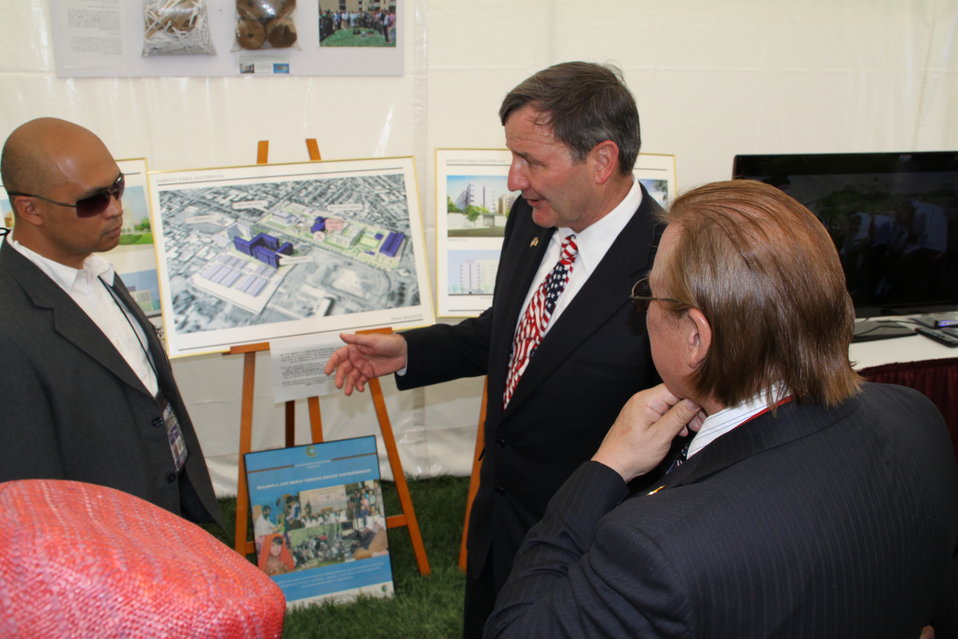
Kabul Official July 4th Celebration